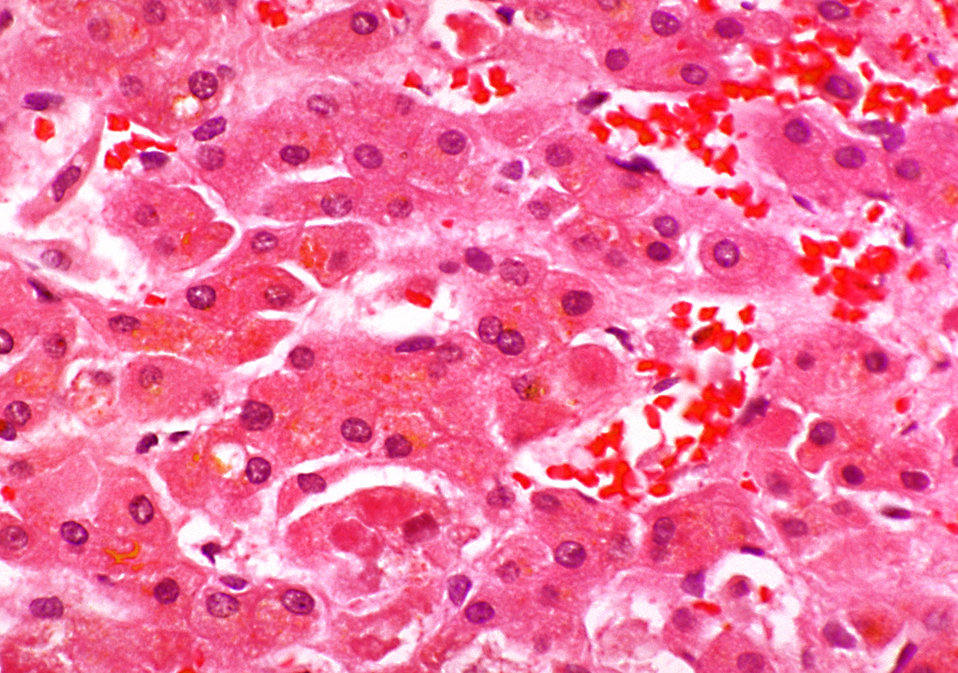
Histopathology of liver showing alcoholic hyalin (Mallory bodies) characteristic of alcohol abuse.